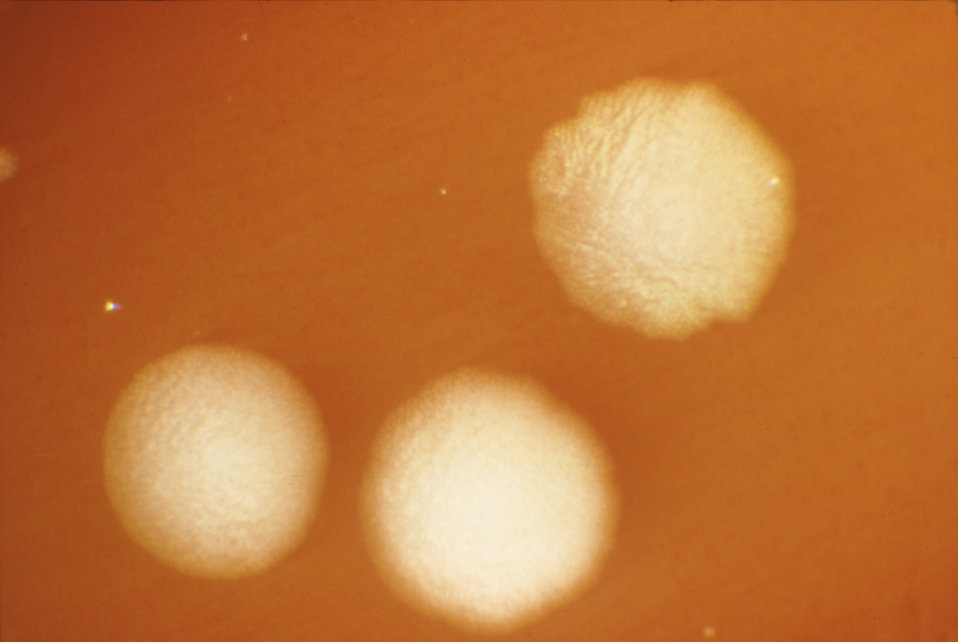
This enlargement depicts Clostridium capitovale colonies grown on a 48 hour blood agar plate; Magnification 15X.